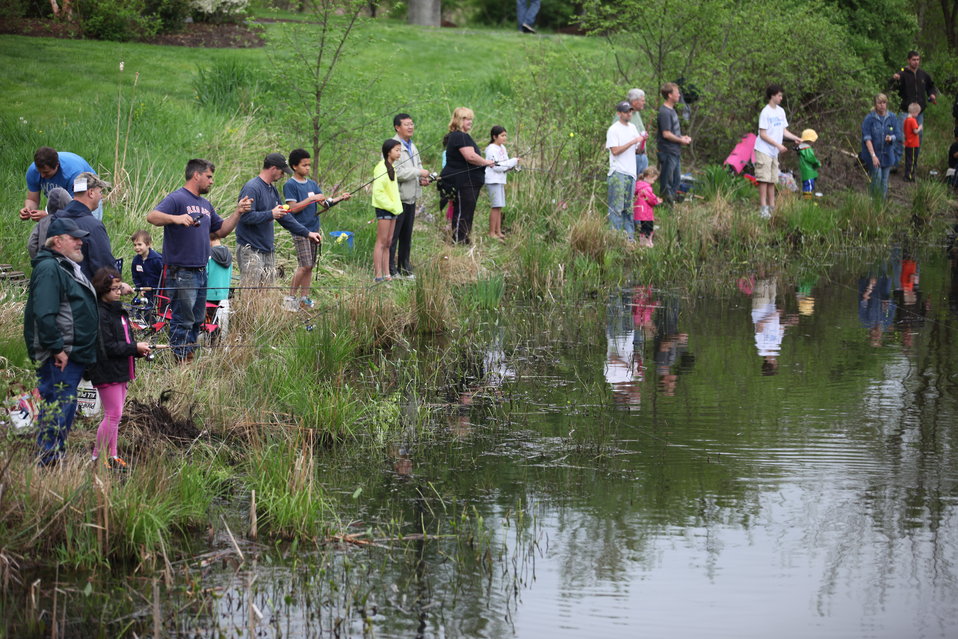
Fishing Derby